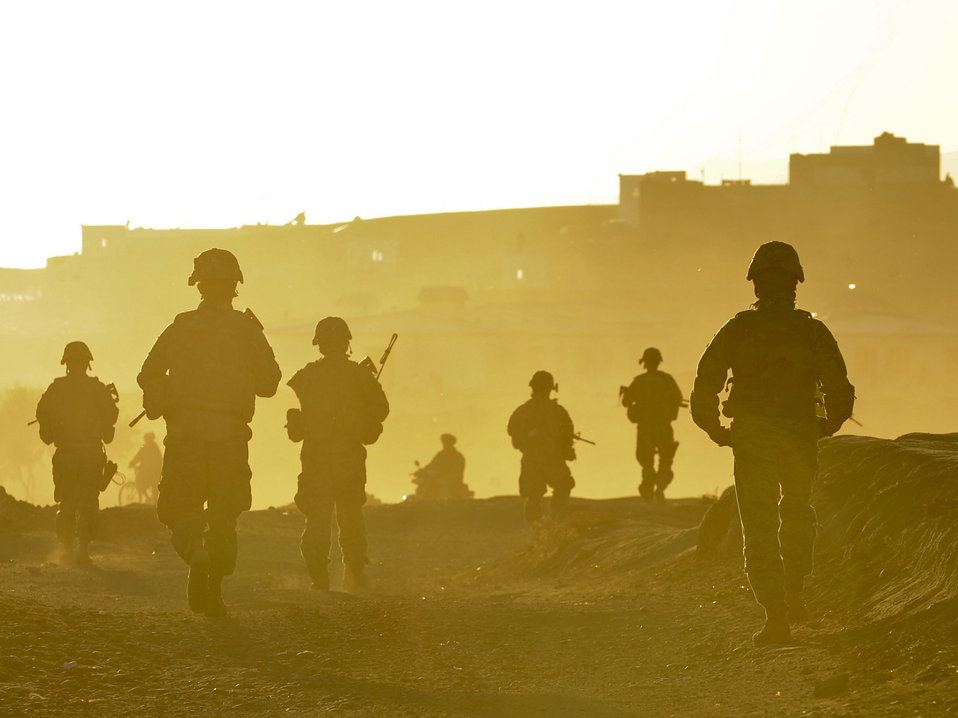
A long day’s work

Soldiers and Airmen return to base after a patrol Nov. 1, 2010, near the city of Qalat, Afghanistan, in the Zabul Province. The Provincial Reconstruction Team Zabul is composed of Air Force, Army, U.S. Department of State, U.S. Agency for International Development and U.S. Department of Agriculture personnel who work with the government of Afghanistan to improve stability and development throughout the province.